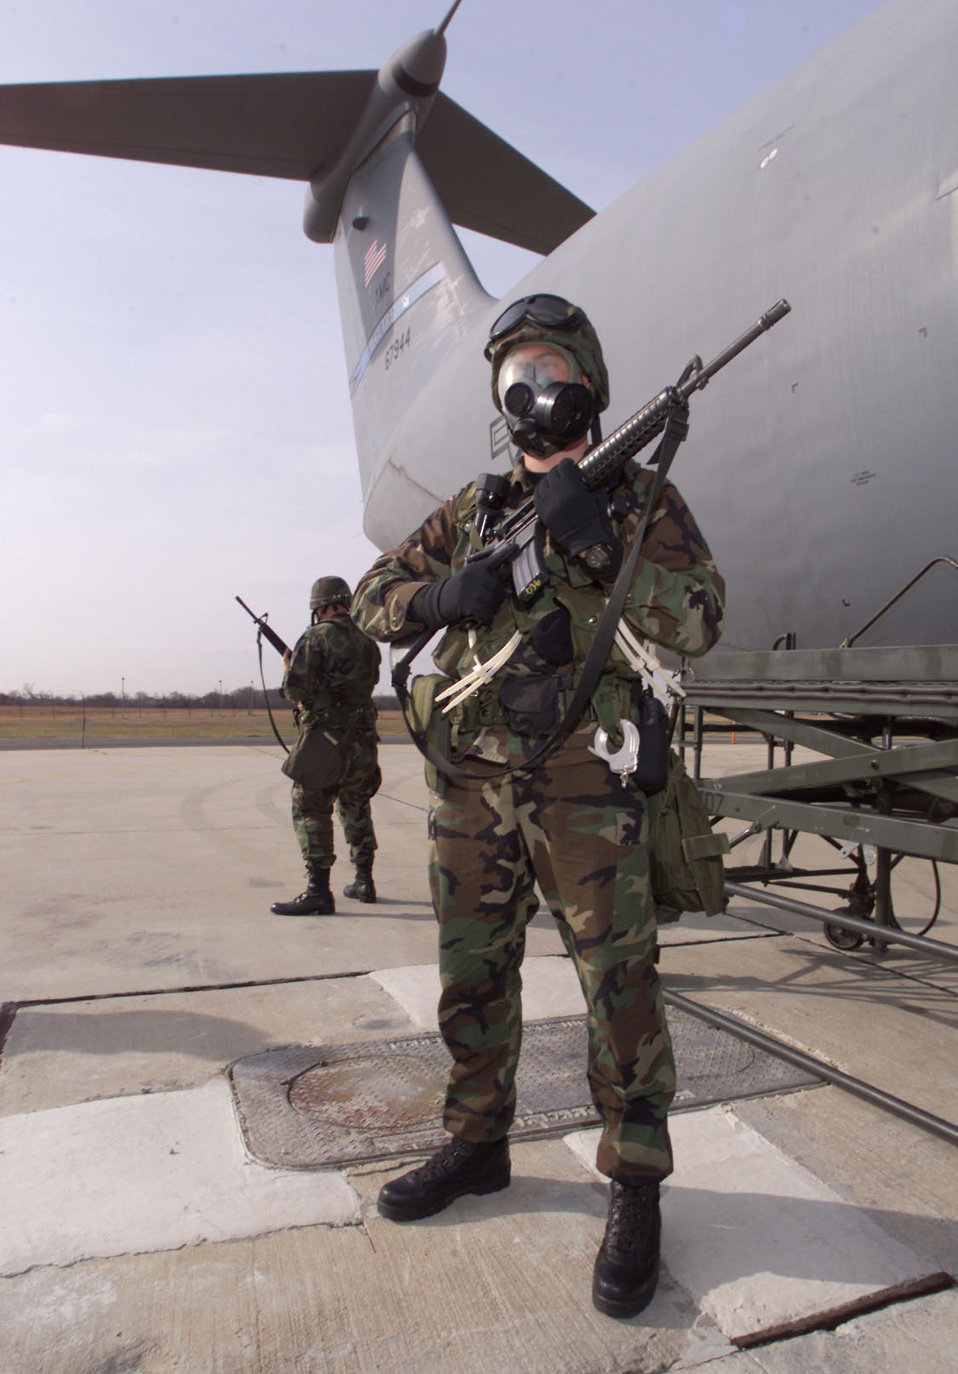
Guard duty

MCGUIRE AIR FORCE BASE, N.J. -- Airmen from the 305th Security Forces Squadron at McGuire secure a C-141B Starlifter during an M-999 exercise in preparation for an upcoming Nuclear Staff Assistant Visit. The Starlifter fulfills the vast spectrum of airlift requirements through its ability to airlift combat forces and their equipment either by land or airdrop.